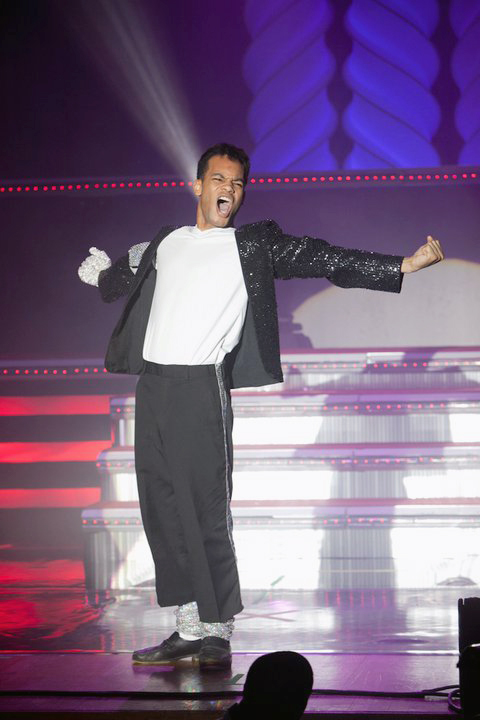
Airmen win honors at worldwide talent search

Staff Sgt. Tyron Jones strikes a famous Michael Jackson pose Dec. 12, 2010, during his dance performance at the Worldwide Talent Search at Lackland Air Force Base, Texas. Sergeant Jones is assigned to Osan Air Base, Korea.